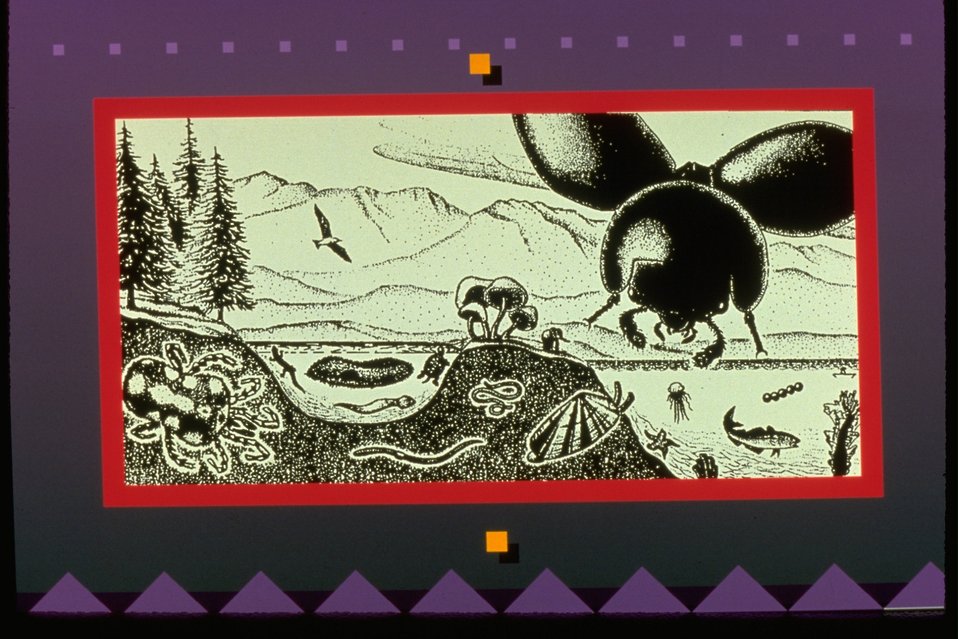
Phylum photo, with relative size of plant/animal phylums.